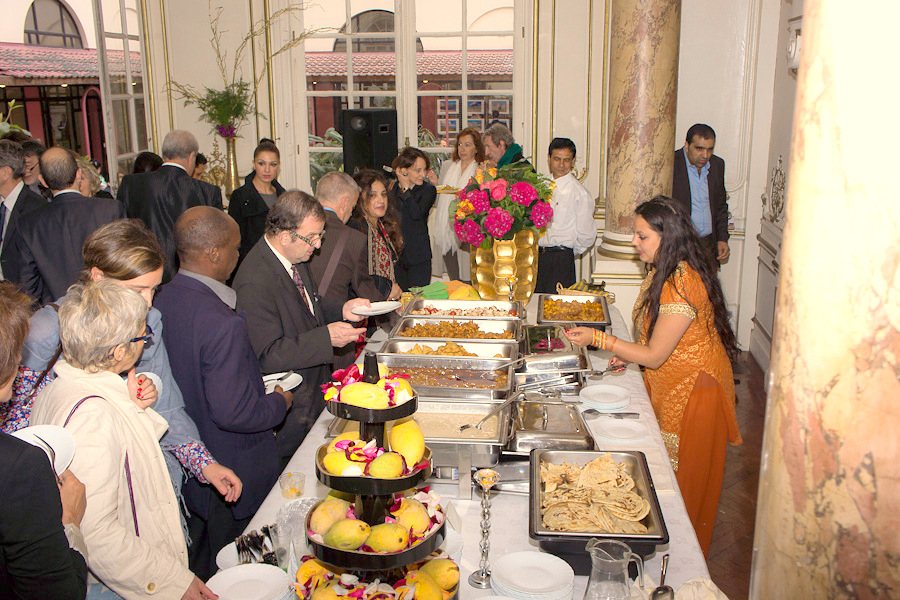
Celebrating Pakistani Mangoes in France

France, July 3, 2013: The tasteful presentation of Pakistani mangoes on food stations added to the richness of the traditional cuisine.